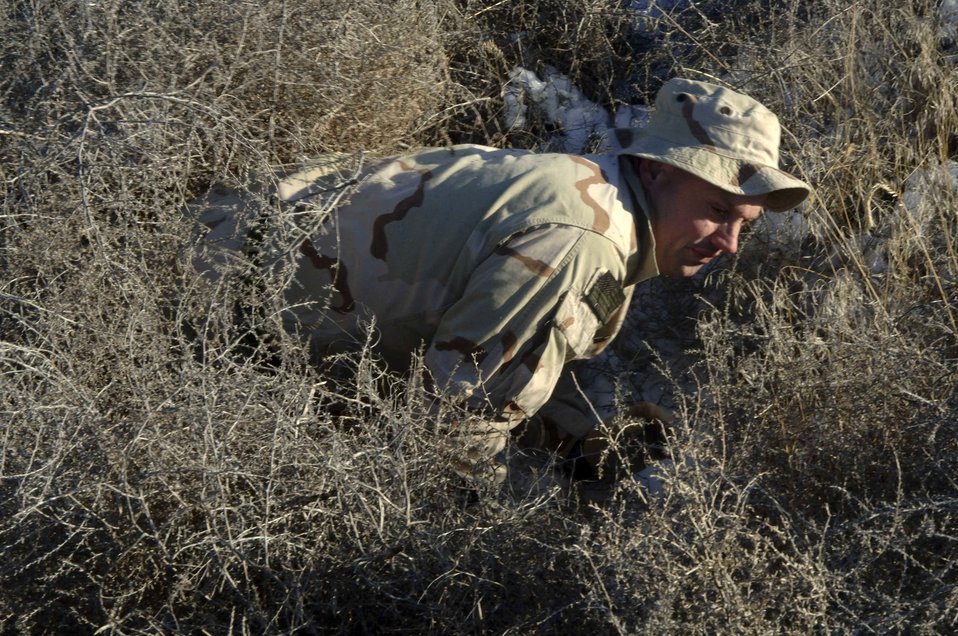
Train to survive

MOUNTAIN HOME AIR FORCE BASE, Idaho (AFPN) -- With a little help from his natural surroundings, Tech. Sgt. Micheal Ferguson, a survival evasion resistance escape specialist here, demonstrates that adequately blending in with your surroundings includes using more than just war paint. Sergeant Ferguson teaches similar techniques that Airmen can use to survive in most any environment, evade and resist capture by the enemy, and escape should they be captured.